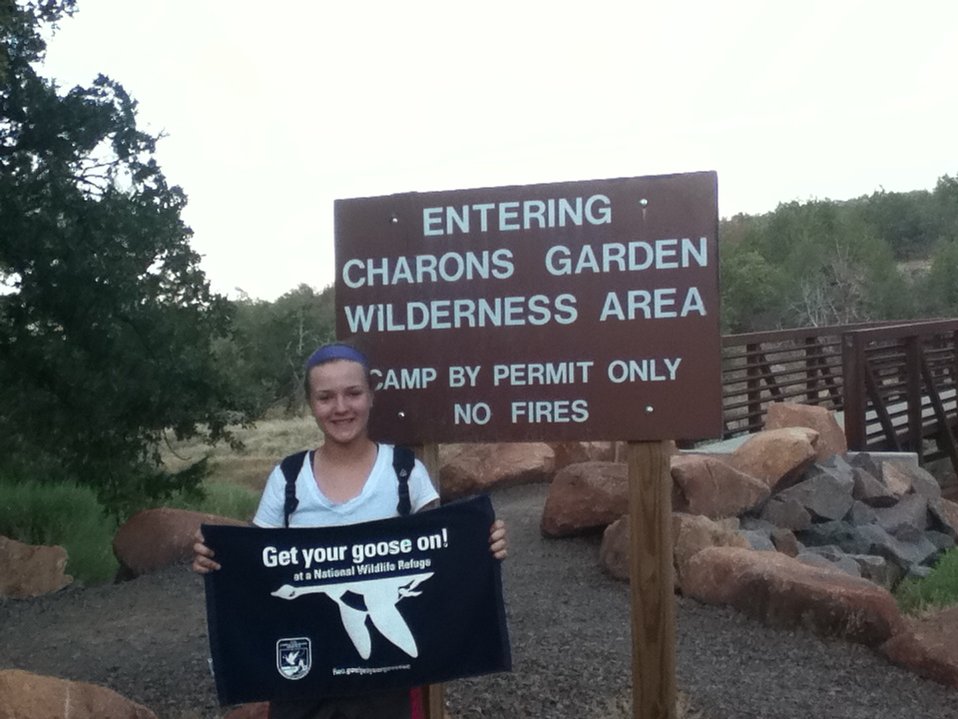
Get Your Goose On!

Wichita Mountains National Wildlife Refuge in Oklahoma.